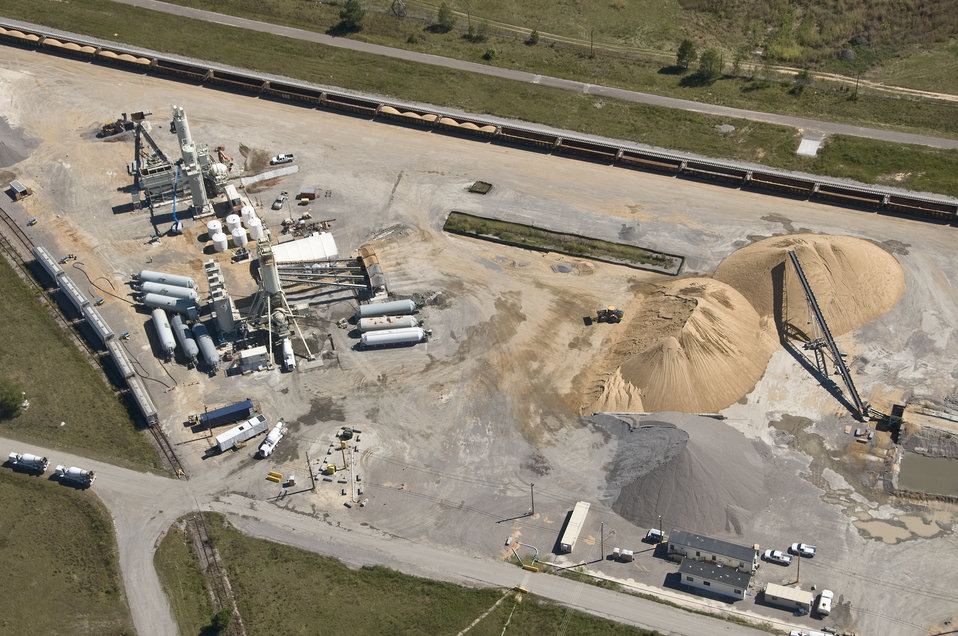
Savannah River Site Small Business

Grade South, Inc., an Aiken County business, received a $6.3 million contract funded by the Recovery Act to clean up and close the P Area Ash Basin.